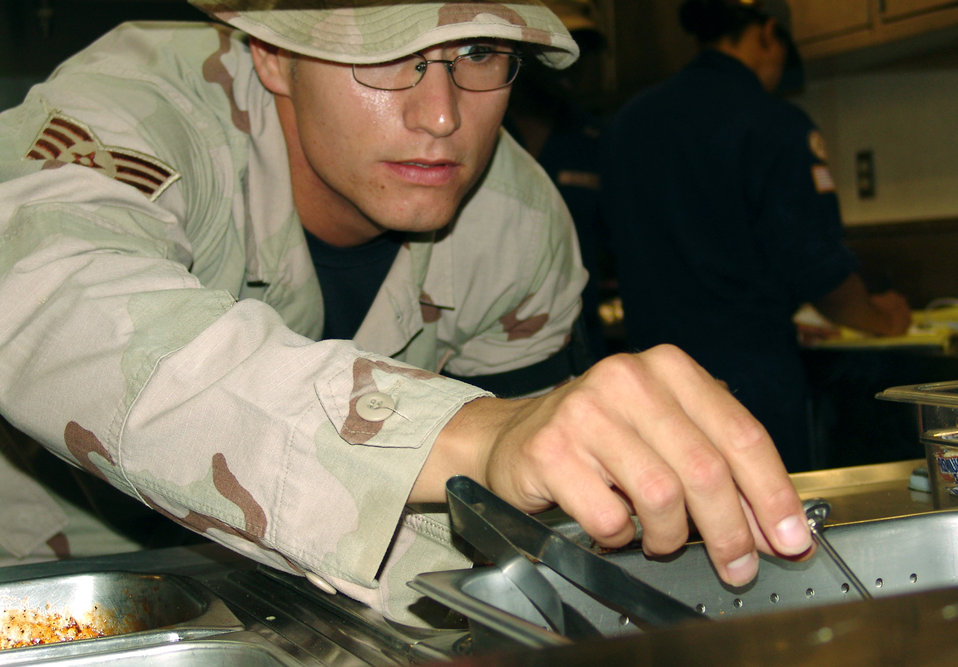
Testing it out

SOUTHWEST ASIA -- Staff Sgt. Sean Hasty tests the temperature of food being served in the galley aboard an Army ship. The Airmen who make up the 2nd Preventive Medicine Team Air Force are responsible for the healthy living environment of 60,000 Soldiers at eight different camps. Sergeant Hasty is a preventive-medicine technician.